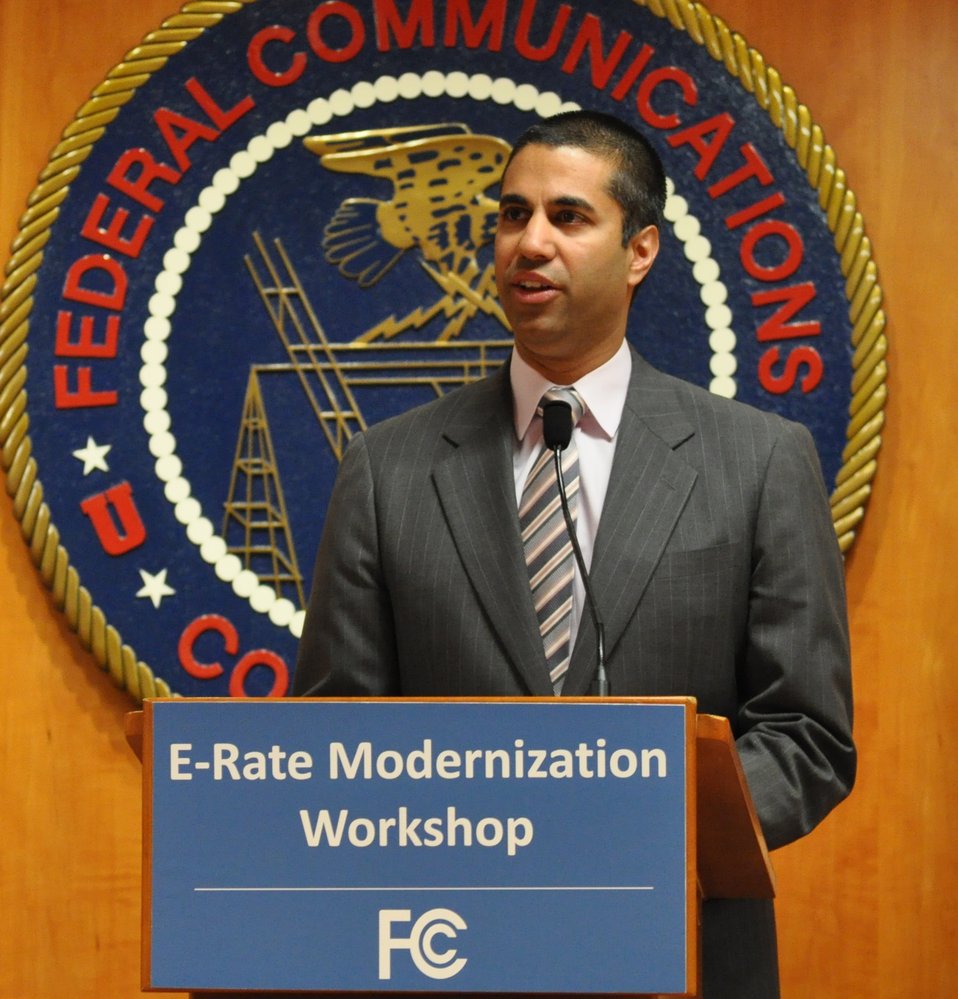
5.6.2014 E-Rate Modernization Workshop

Welcome and Opening Remarks from Commissioner Ajit Pai